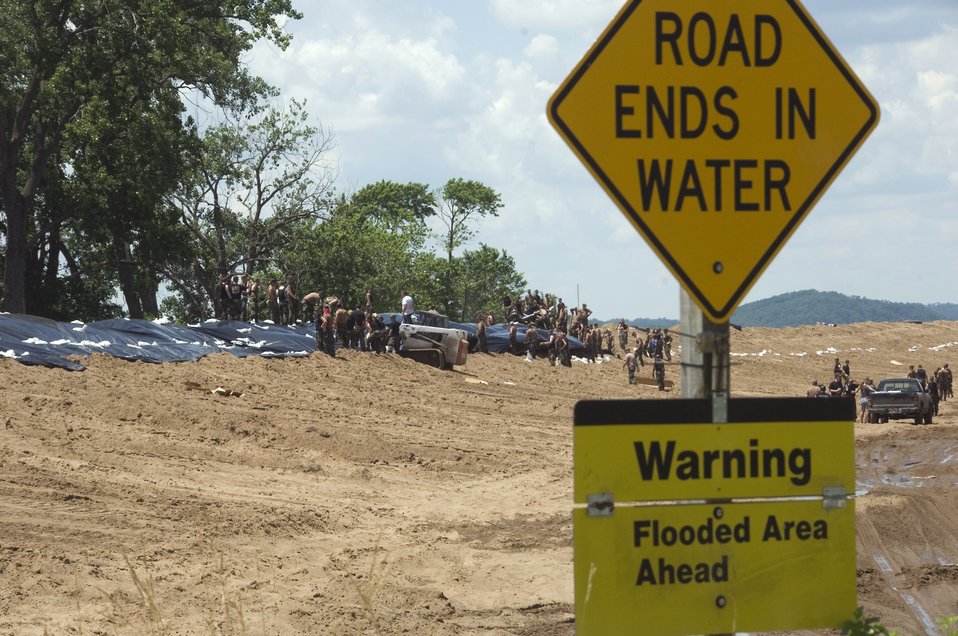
Illinois Air National Guard provides help

Airmen from the Illinois Air National Guard team up with local residents to spread sheets of plastic over reinforced levees along the Mississippi River June 19 near Pleasant Hill, Ill. The plastic sheets prevent erosion that could cause the levee to fail and flood thousands of acres of farmland and homes.